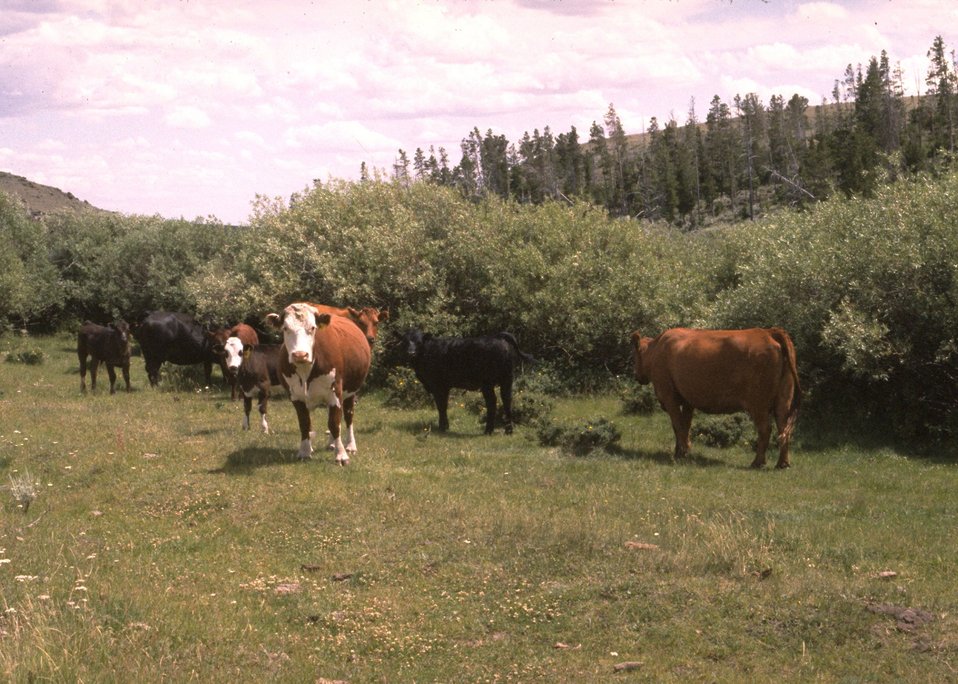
Grazing cattle.